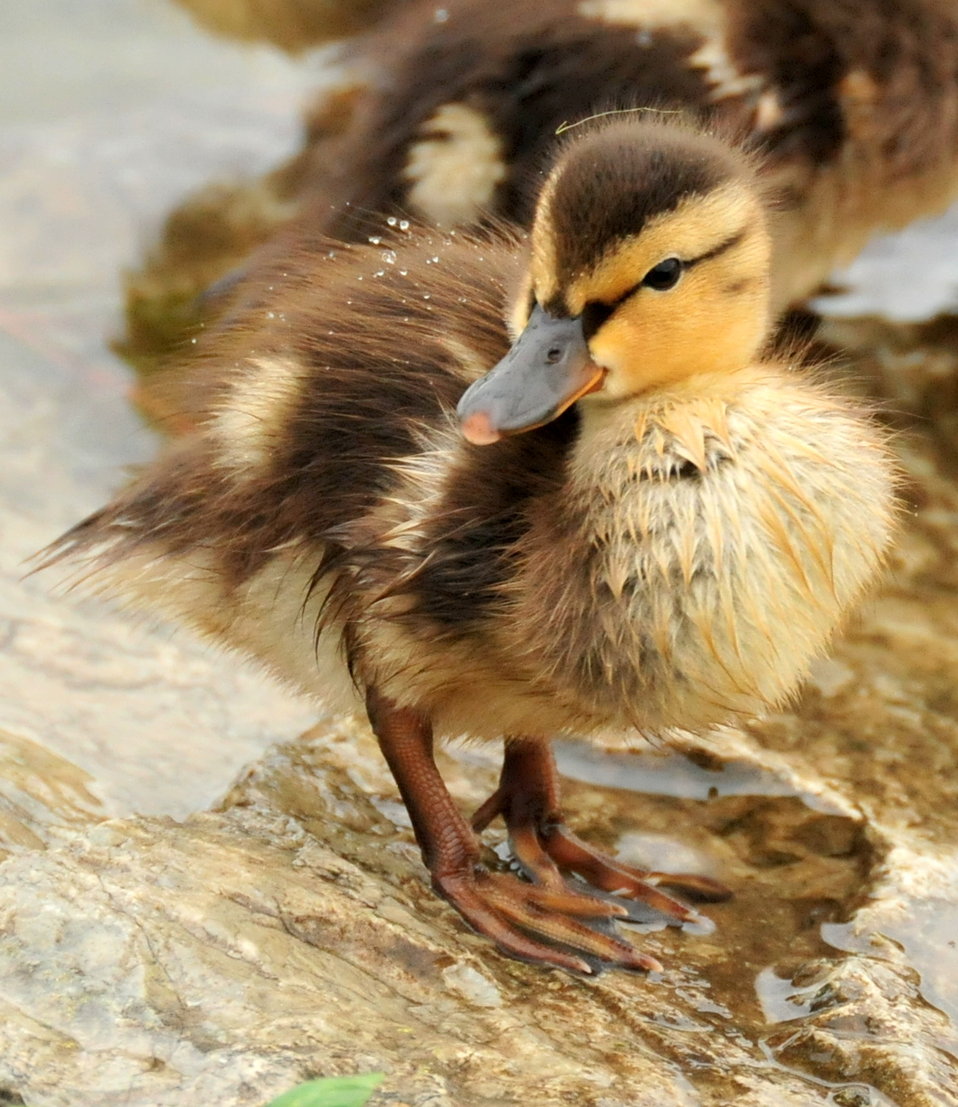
Mallard Ducklings 3